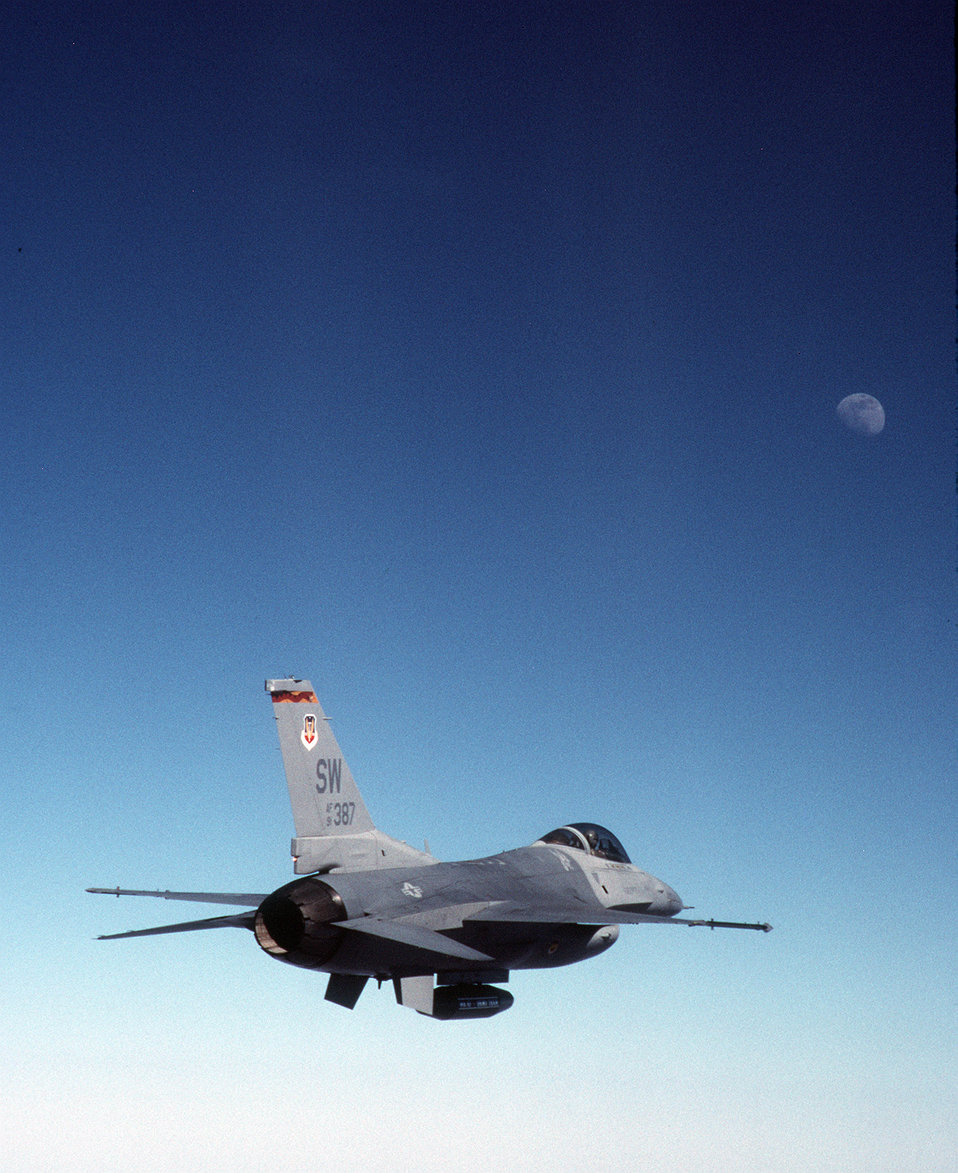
Flying to the moon

SHAW AIR FORCE BASE, S.C. -- An F-16CJ based here appears to be flying towards a rising moon during late afternoon in March. The aircraft is being flown by Capt. Randy Efferson, 9th Air Force F-16